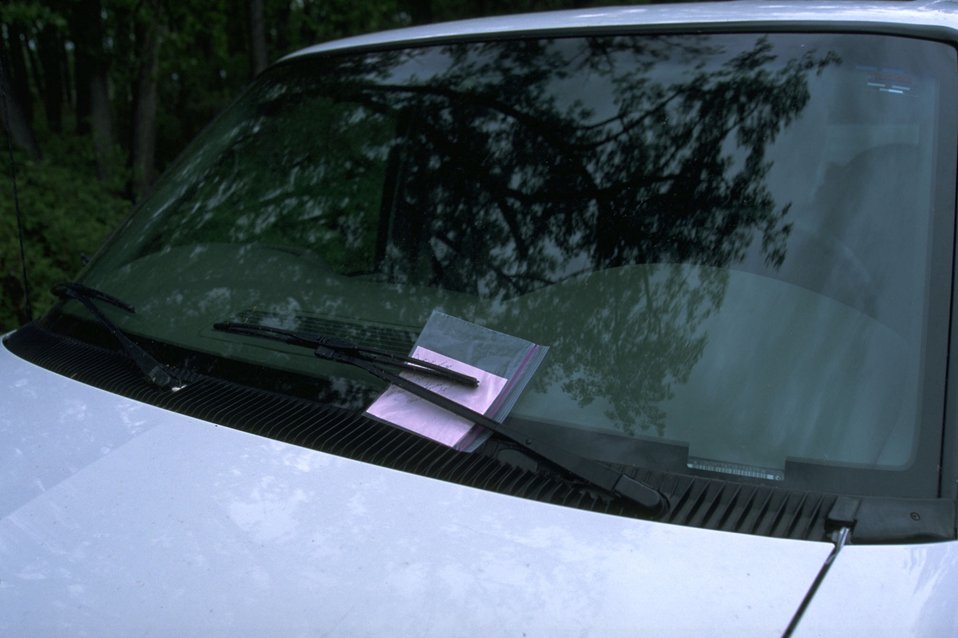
A ""warning ticket"" on a vehicle at Kipp Recreation Site